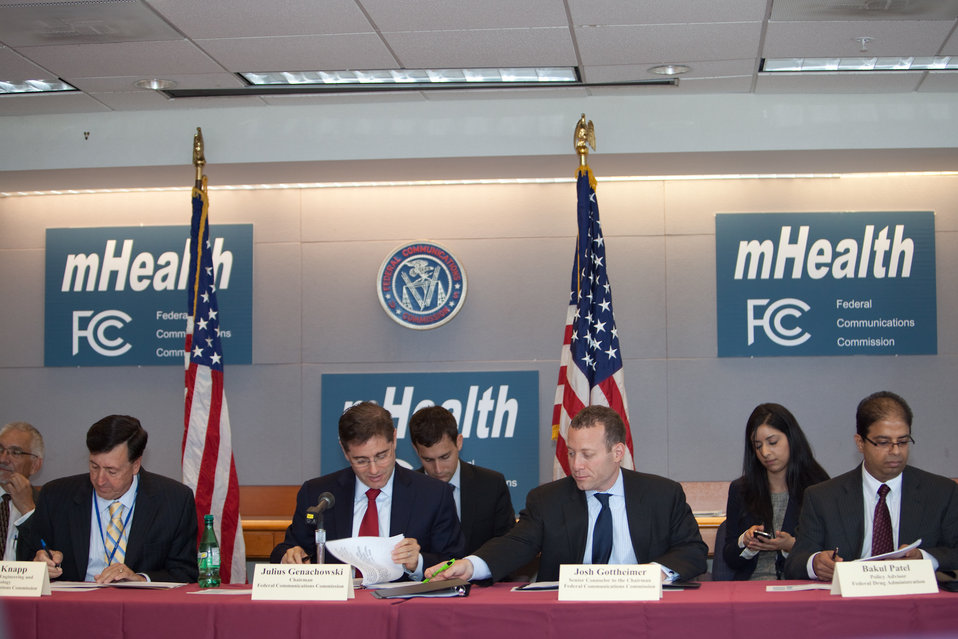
FCC Chairman and mHealth Attendees

From left to right: Julius Knapp - Chief of OET for the FCC, FCC Chairman Julius Genachowski, Josh Gottheimer - Senior Counsel to the Chairman and Bakul Patel - Policy Advisor, Office of the Center Director, Center for Devices and Radiological Health (CDRH), FDA.

June 6, 2012 - FCC Headquaters | Washington, DC